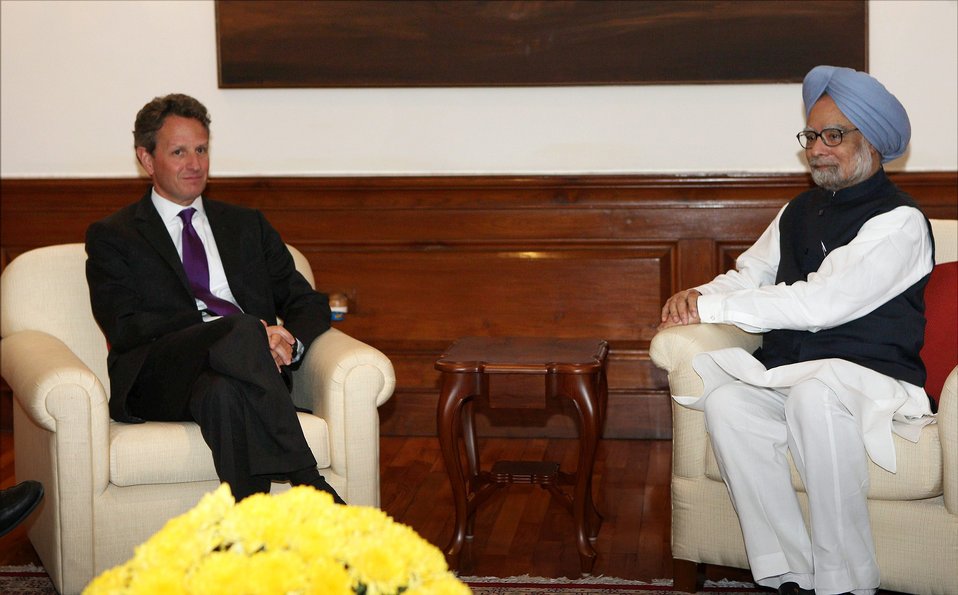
Secretary Timothy Geithner with Prime Minister Manmohan Singh

US Treasury Secretary Timothy Geithner with Indian Prime Minister Manmohan Singhduring a meeting in New Delhi on October 9, 2012.